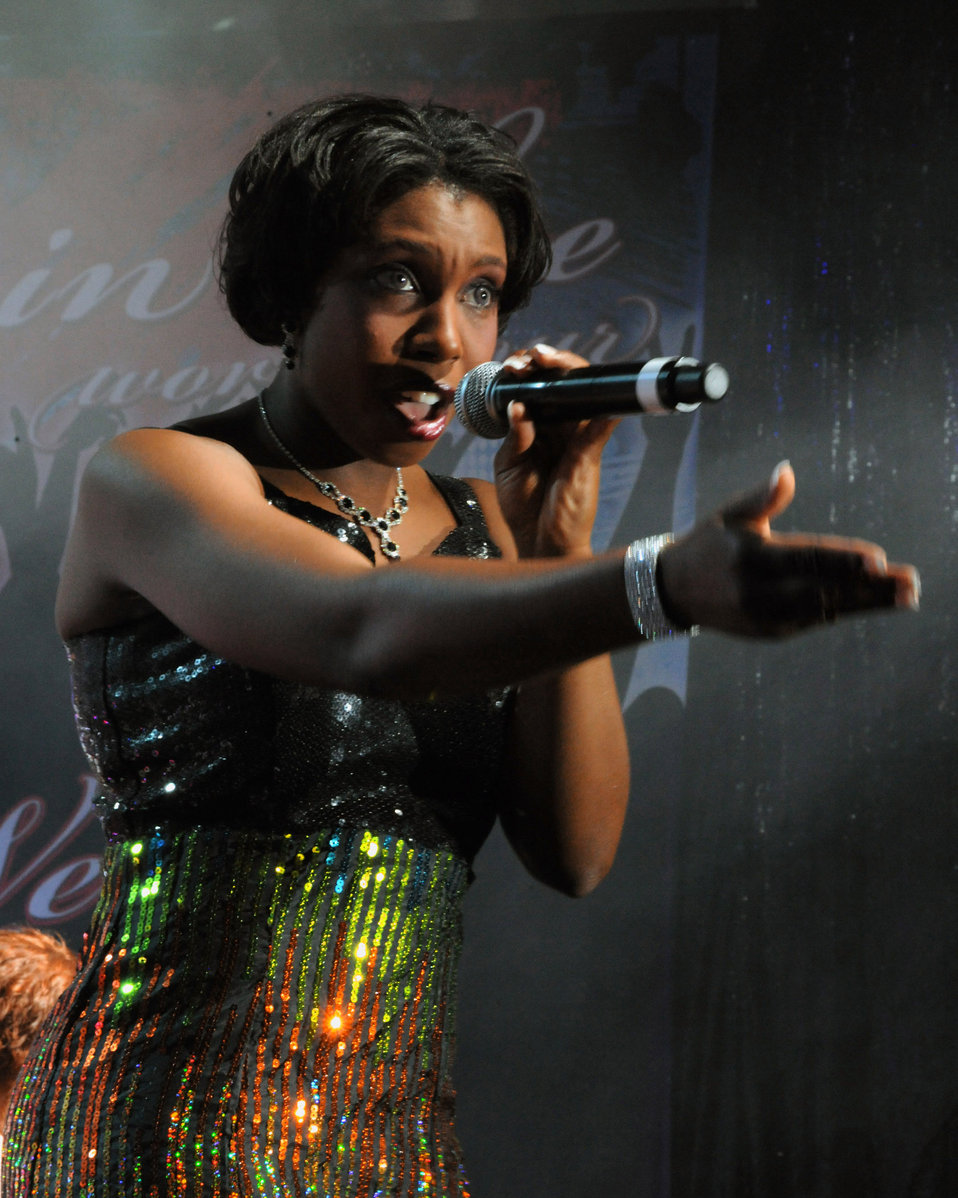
'Tops in Blue' perform overseas

Tops In Blue vocalist, Staff Sgt. Chonte Walker, performs to a capacity crowd June 22, 2010, at Royal Air Force Croughton, England. Sergeant Walker is assigned to the 2nd Civil Engineer Squadron at Barksdale Air Force Base, La.